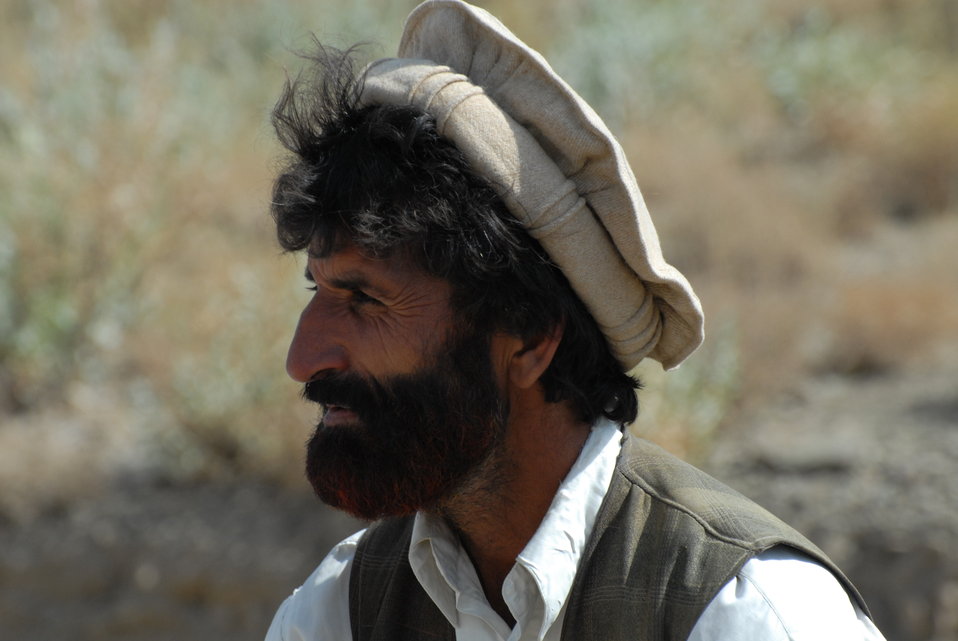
'On the Road' in Paktya Province